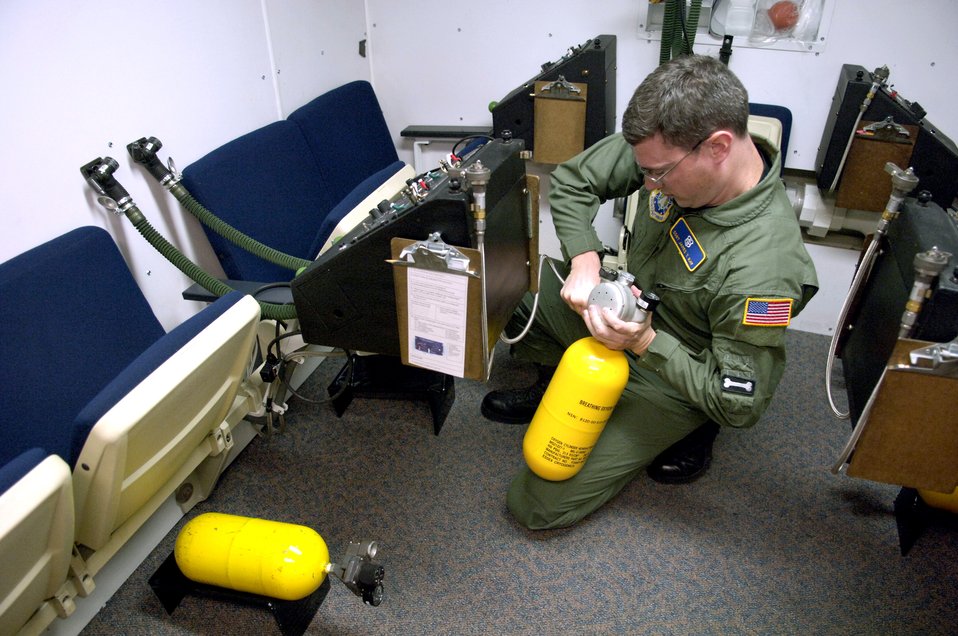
Physiological training crucial for aircrews

Staff Sgt. James Ray fills a walk around air bottle in preparation for a physiological training class at Peterson Air Force Base, Colo., on Aug. 9. Sergeant Ray is an aerospace physiological technician with the 21st Aerospace Medical Squadron.